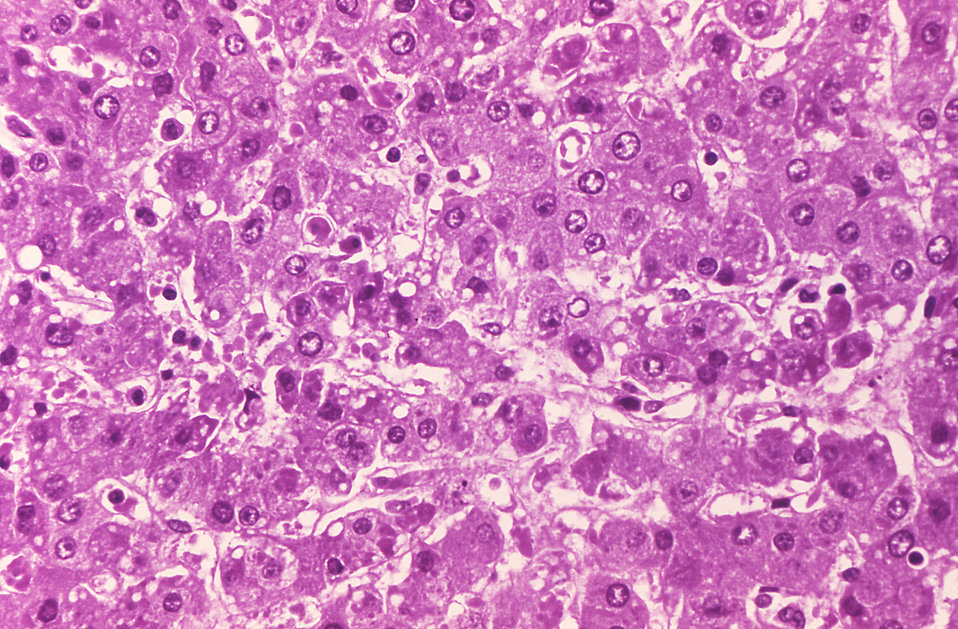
This micrograph shows human liver tissue infected with the Ebola virus, the cause of Ebola hemorrhagic fever.